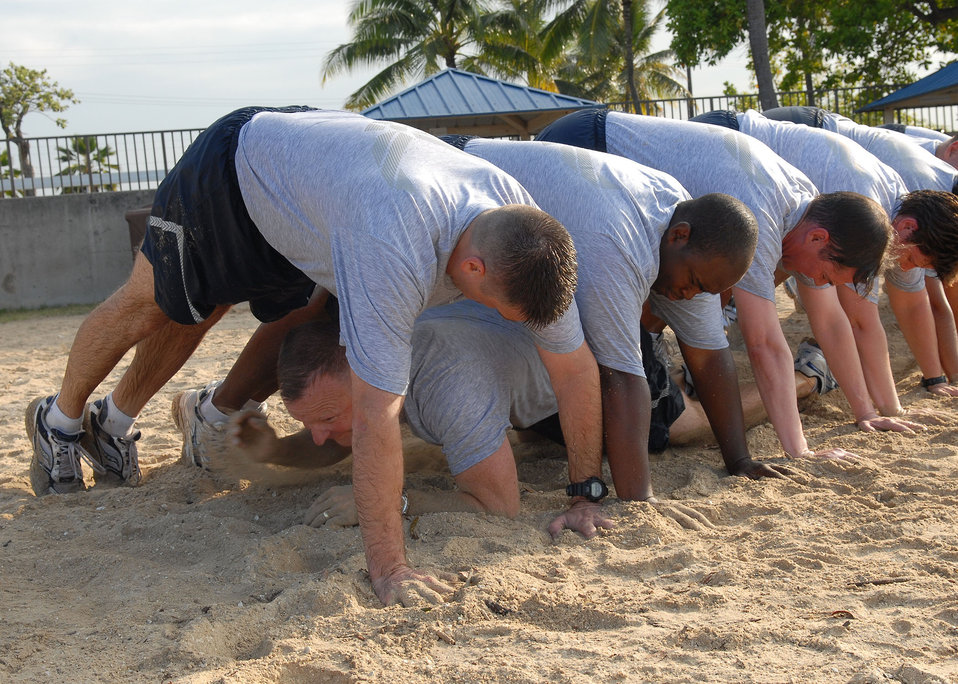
Beach workout

A member of the Pacific Air Forces A-staff crawls under a